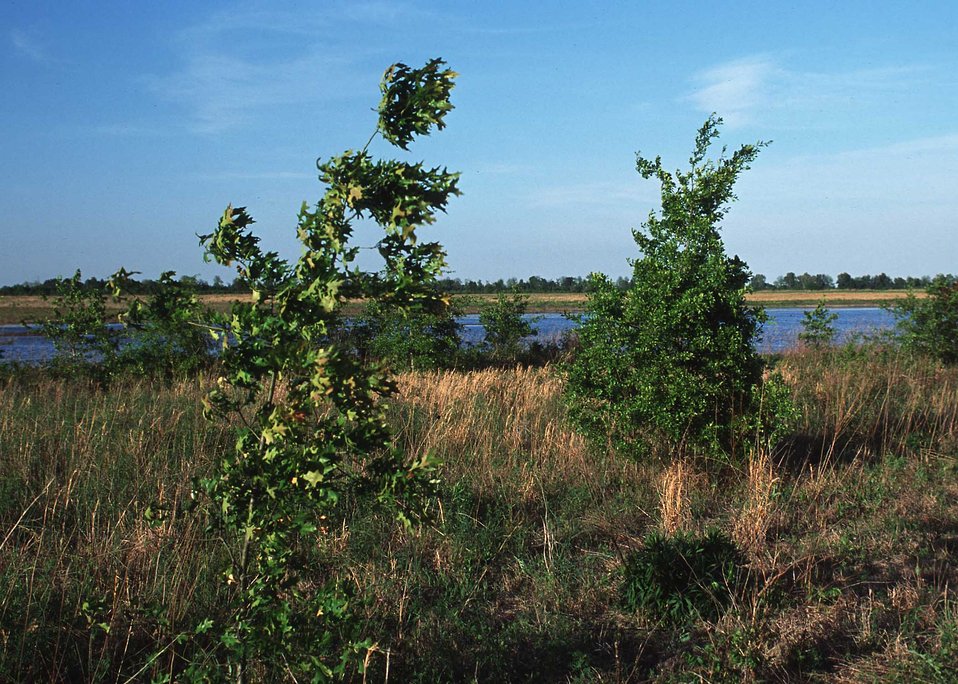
Hardwood trees planted as part of a bottomland hardwood wetlands restoration project in central Mississippi.